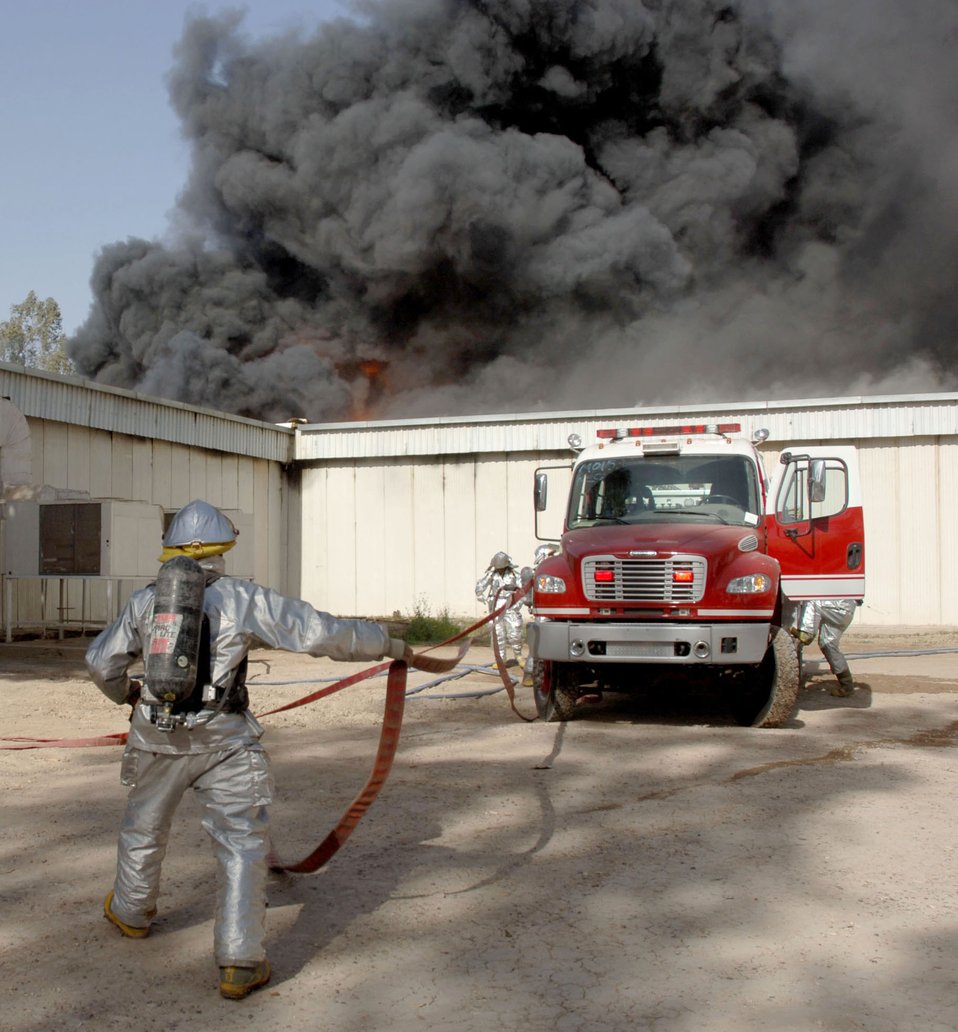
Five-alarm blaze

Firefighters from the 447th Expeditionary Civil Engineer Squadron fire department, based at Sather Air Base, Iraq, prepare to battle a five-alarm blaze at a weapons training facility Saturday March 11, 2006, at Victory Base Complex. American and Iraqi firefighters saved half of the facility, including an indoor weapons training range.